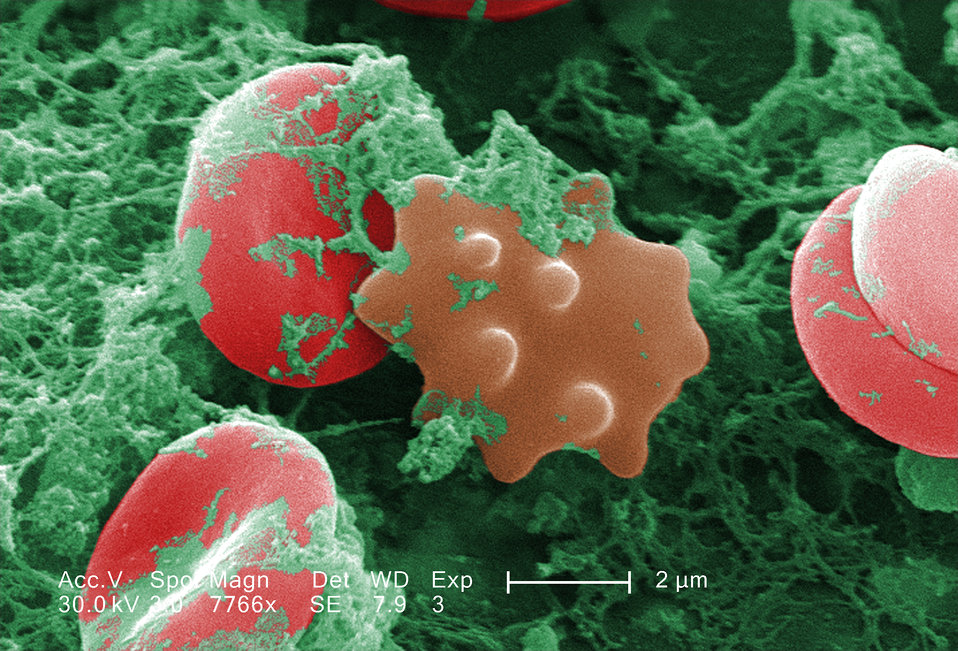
This scanning electron micrograph (SEM) depicted a number of red blood cells found enmeshed in a fibrinous matrix on the luminal surface of an indwelling vascular catheter; Magnified 7766x. In this instance, the indwelling catheter was a tube that was left in place creating a patent portal directly into a blood vessel. The erythrocyte in the center had undergone the process of 'crenation', whereupon, it developed a number of cell wall projections, thereby, transforming it into what is termed an 'acanthocyte', or 'spur cell'. See PHIL 7319 for a black and white version of this micrograph.